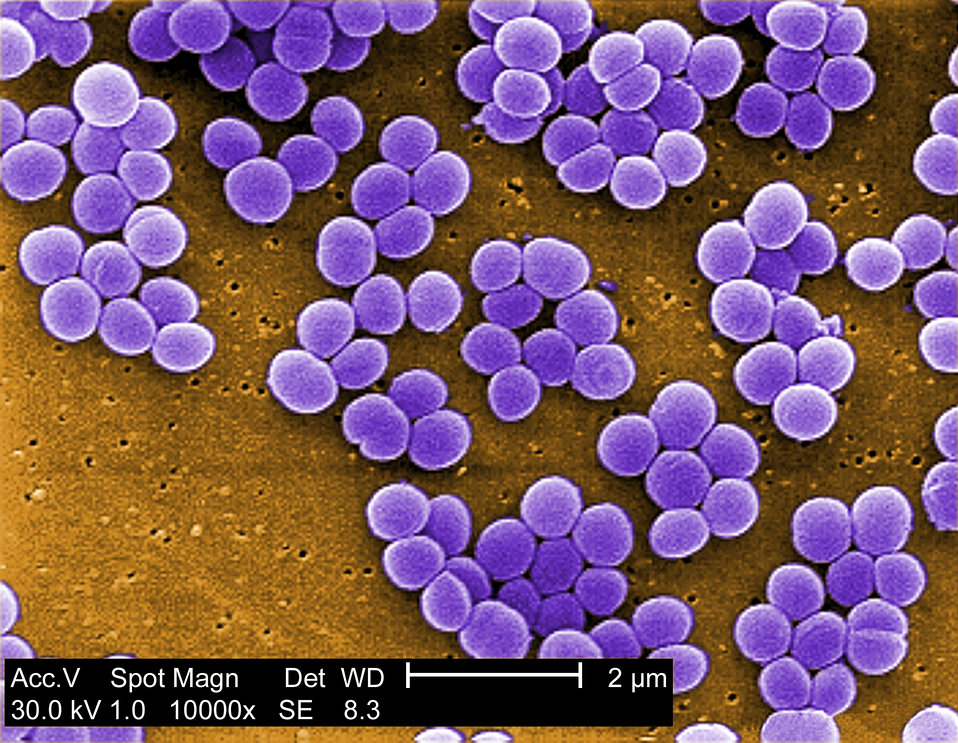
Under a high magnification of 10,000x, this scanning electron micrograph (SEM) shows a strain of Staphylococcus aureus bacteria taken from a vancomycin intermediate resistant culture (VISA).